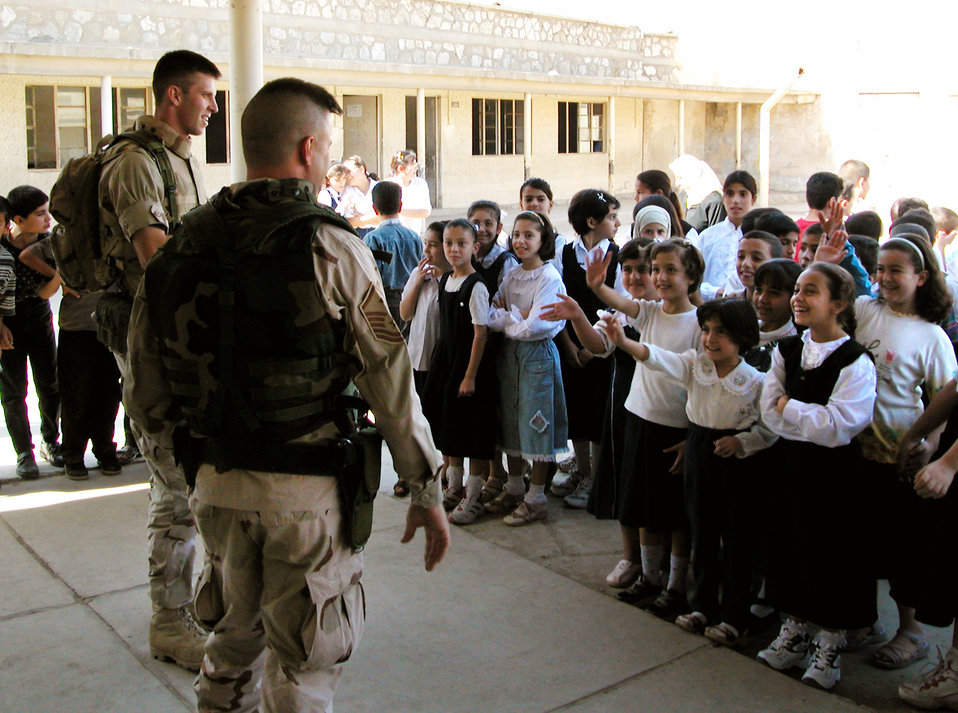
School donation

KIRKUK, Iraq -- Master Sgt. Robert Frank and 1st Lt. Art Patek talk with students at Al Ilaf school here. The two were part of a team from the 380th Air Expeditionary Wing who traveled from a forward-deployed air base to donate more than $5,000 of supplies to schools here. Frank is the first sergeant of the 380th Expeditionary Mission Support Group, and Patek is the 380th Expeditionary Operations Group executive officer.